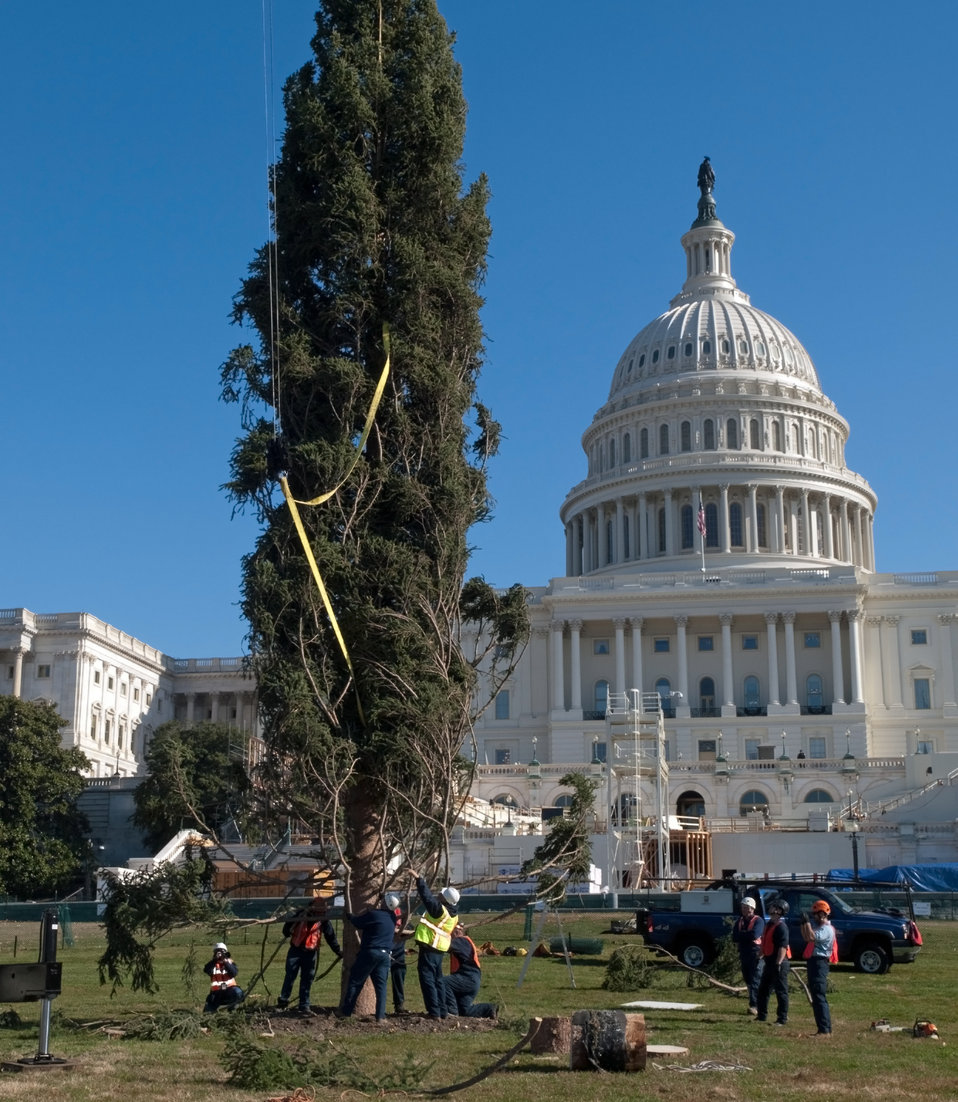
Members of the Capitol grounds crew place the 2012 Capitol Christmas Tree on the west lawn of the Capitol in Washington, D.C. on Nov.26, 2012. The 73-foot Englemann spruce traveled from the White River National Forest in Colorado.